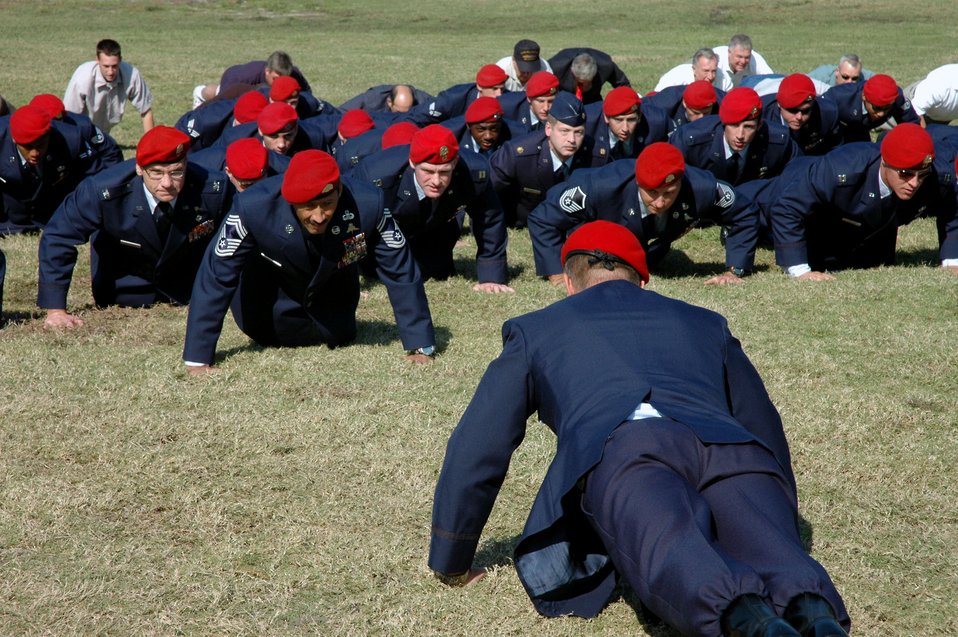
Combat controllers honor fallen comrades

Col. Marc Stratton leads a flight of current and retired combat controllers in memorial push-ups during the Annual Combat Control Association reunion and memorial service Nov. 3 at Hurlburt Field, Fla. More than 100 people gathered for the ceremony to honor their fallen comrades. Colonel Stratton is the 720th Special Tactics Group commander.